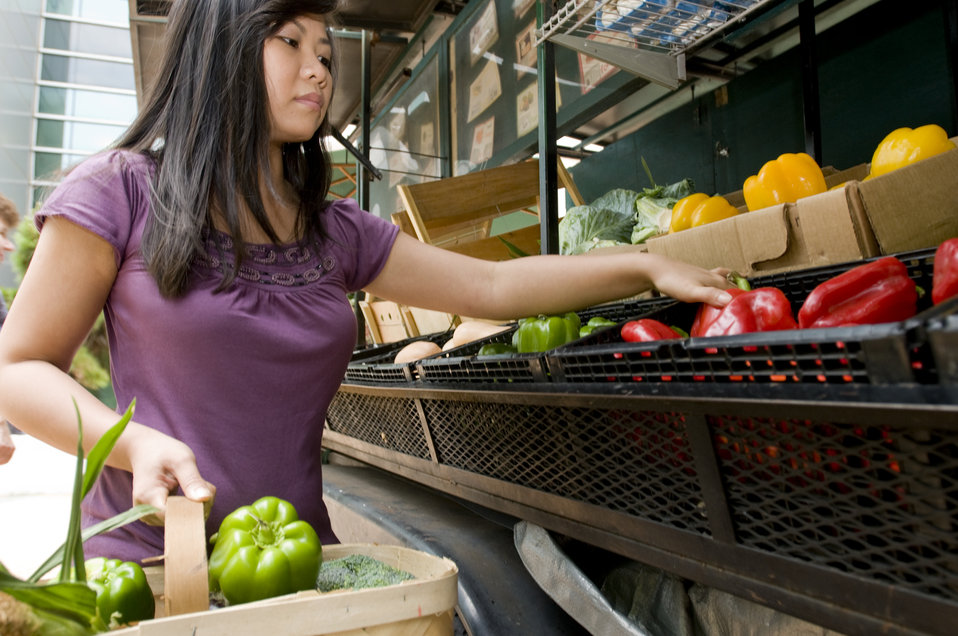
This woman was photographed as she was shopping for groceries at a mobile Georgian farmers market at a point in her activity where she was picking out a bright red, ripe bell pepper from a basket container in the market's produce section.